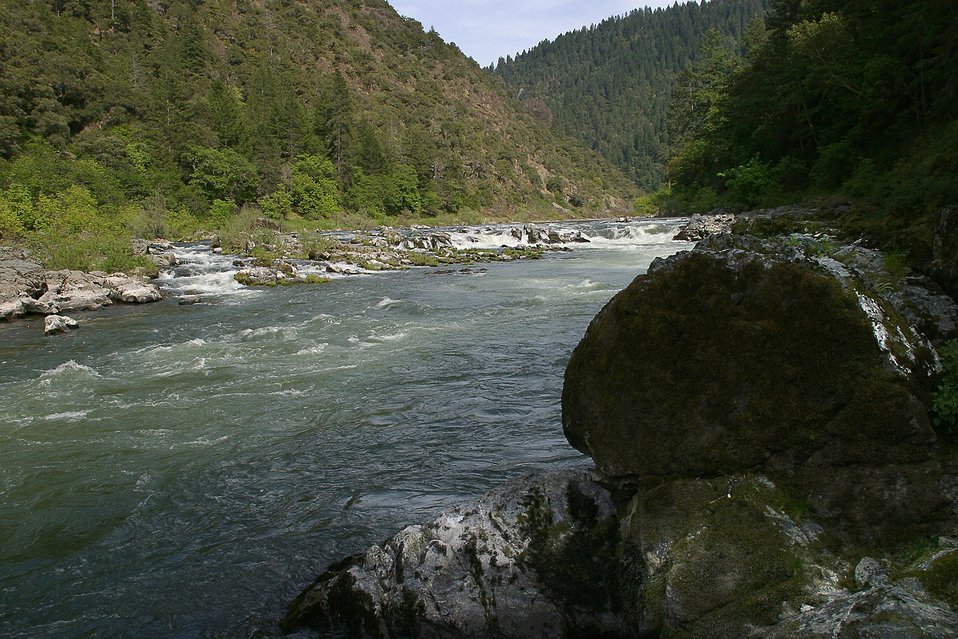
Rainie Falls on the Wild section of the Rogue River from Grave Creek to Foster Bar. 3100 cfs at Grants Pass and 5300 at Agness.